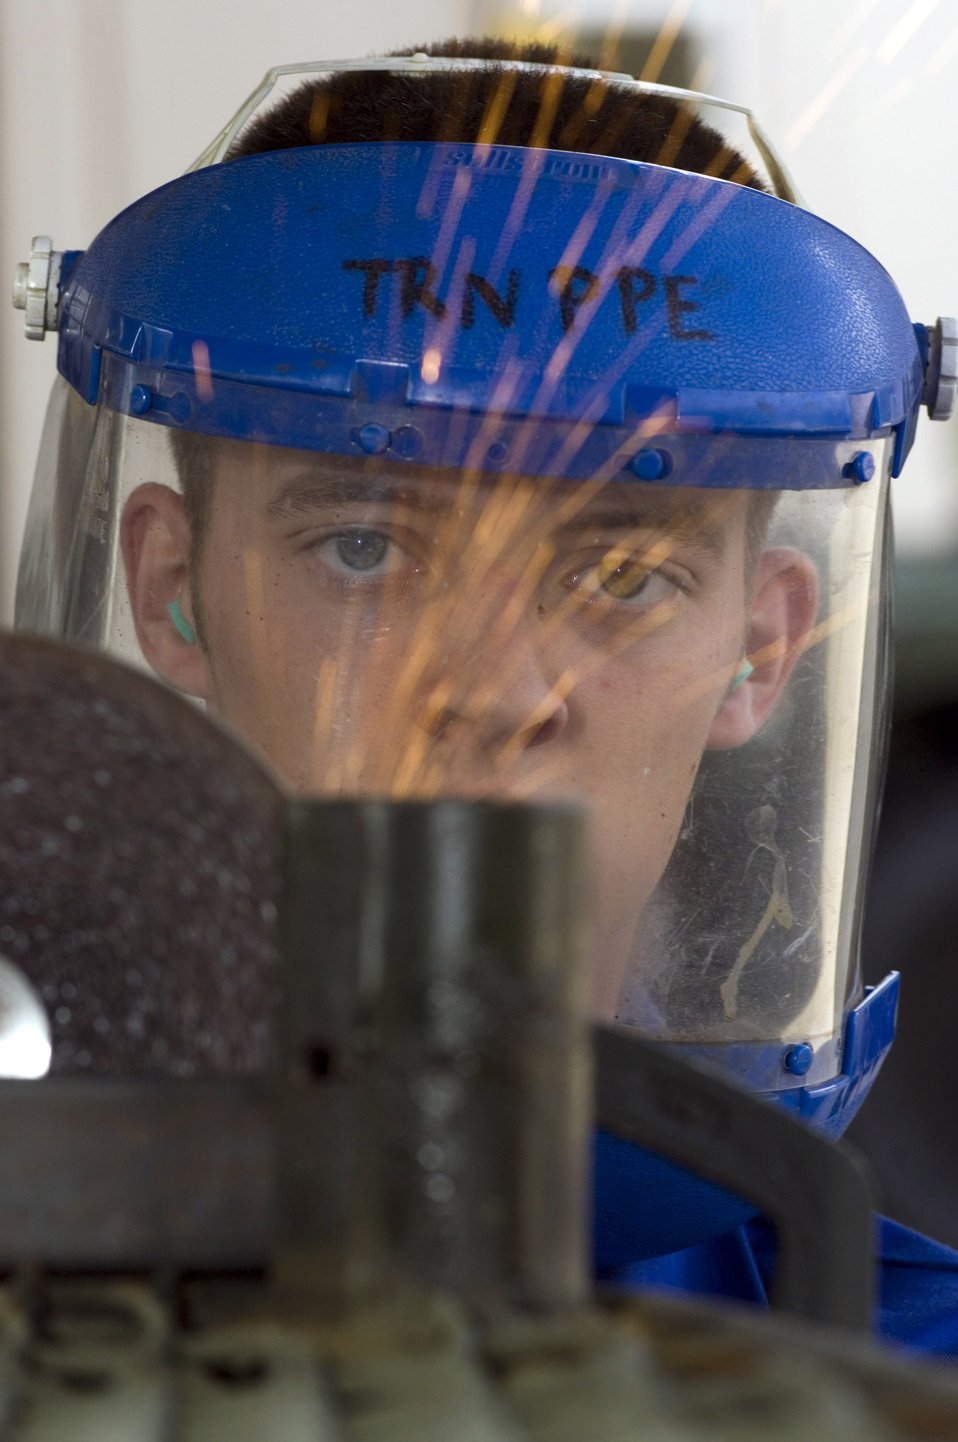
Paint removal

Senior Airman Brian Roub removes paint from a section of an aircraft maintenance stand Sept. 20 while preparing to weld at Sembach Air Base, Germany. Airman Roub is a vehicle body mechanic with Sembach's 435th Material Maintenance Squadron.